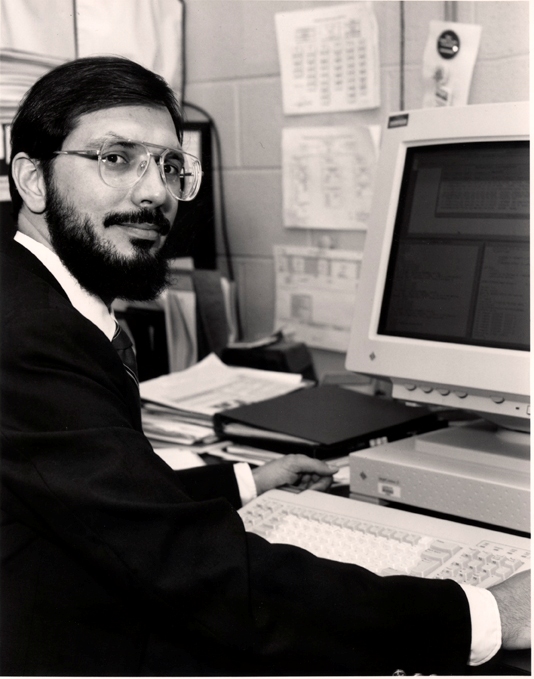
DR.RUSSELL HULSE, PRINCETON PLASMA PHYSICS LABORATORY.